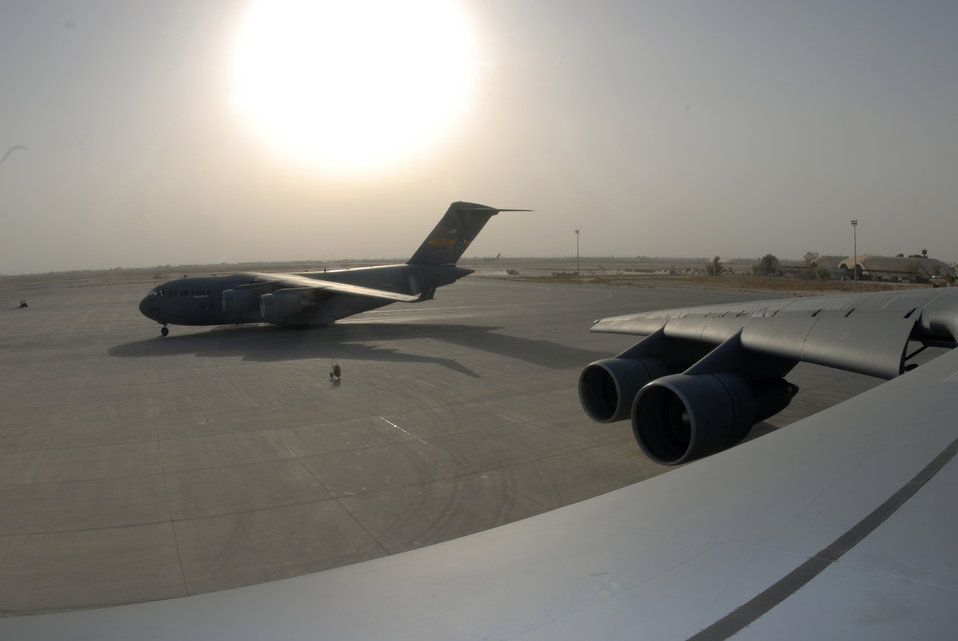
Heavy lifters

The sun shines on a C-5 Galaxy (foreground) and a C-17 Globemaster III Sept. 26 at Joint Base Balad, Iraq. The aerial port at Joint Base Balad is the busiest in the Department of Defense Airmen here move more cargo per year than Dover Air Force Base, Del.; Charleston AFB, S.C.; and Travis AFB, Calif., combined. The C-5 is assigned to the 436th Airlift Wing at Dover AFB. The C-17 is deployed from the 437th Airlift Wing at Charleston AFB.